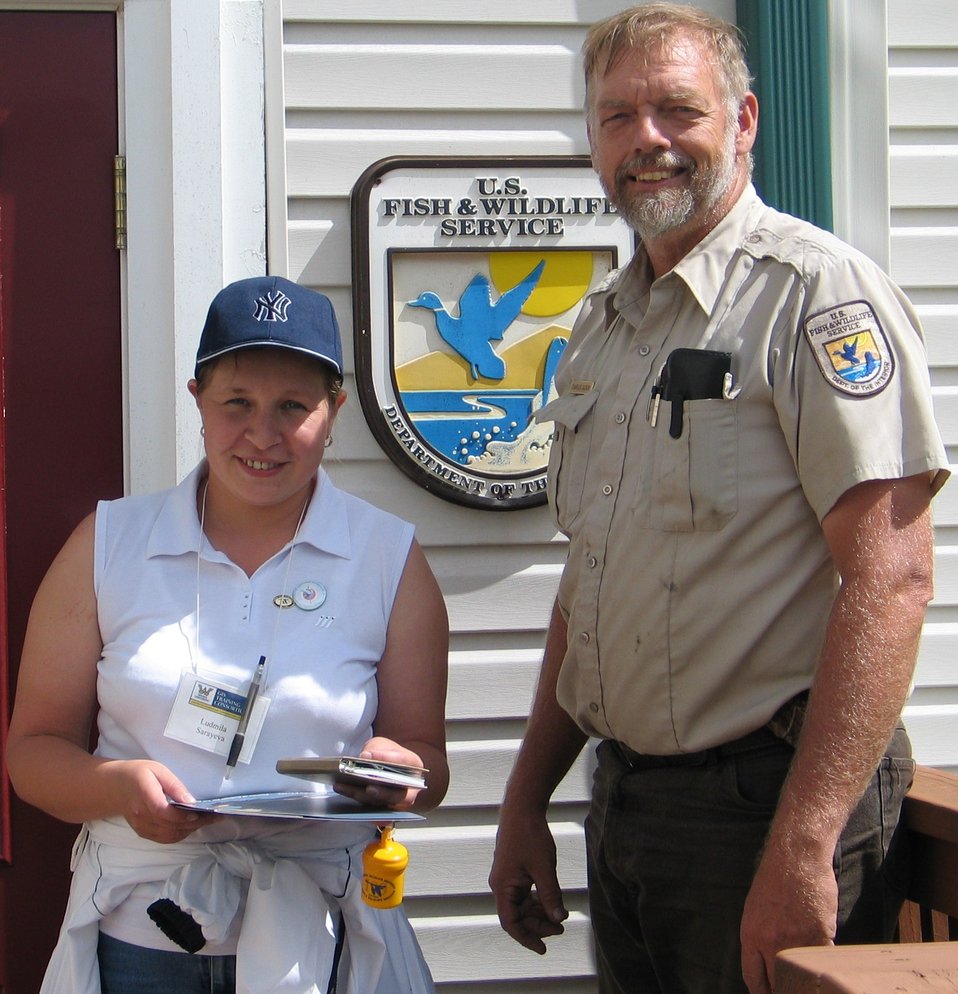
Lyudmila Saraeva and Charles Glock

Lyudmila Saraeva of the Russian Ministry of Environment and Natural Resources and Charles Glock of the U.S. Fish and Wildlife Service.